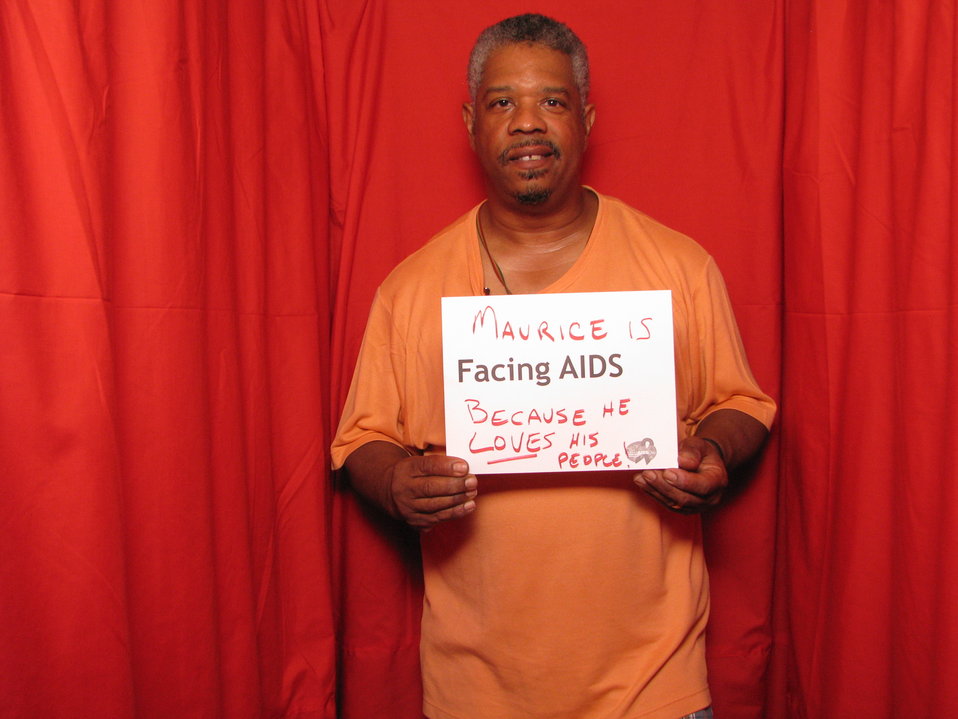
Maurice is FACING AIDS because he LOVES his PEOPLE.

From the AIDS.gov photo booth at the U.S. Conference on AIDS, September 2010 (Orlando, FL).